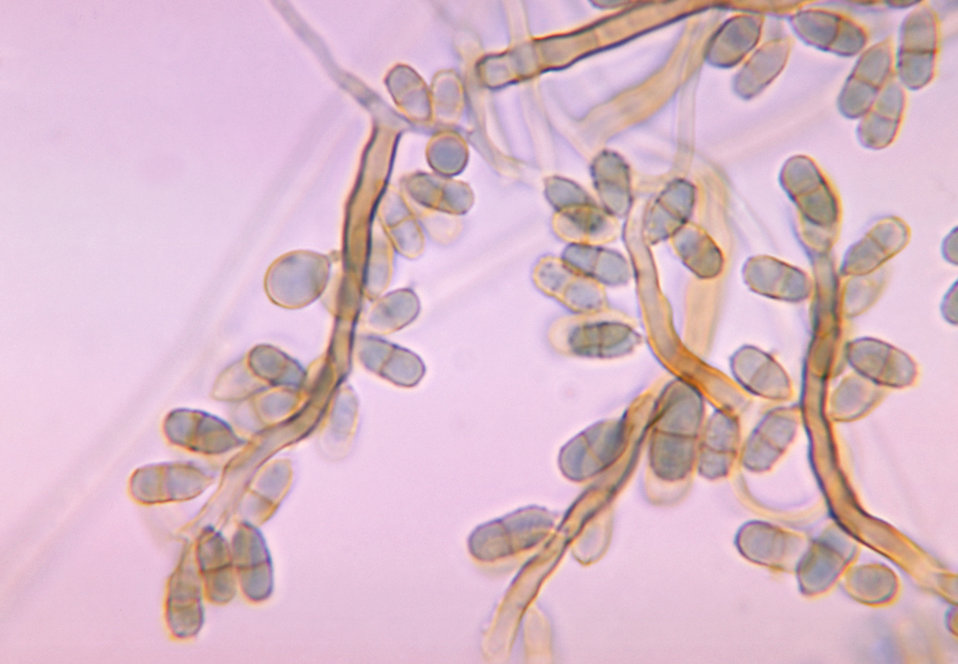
This photomicrograph shows conidia-laden conidiophores of the fungus Exophiala salmonis.